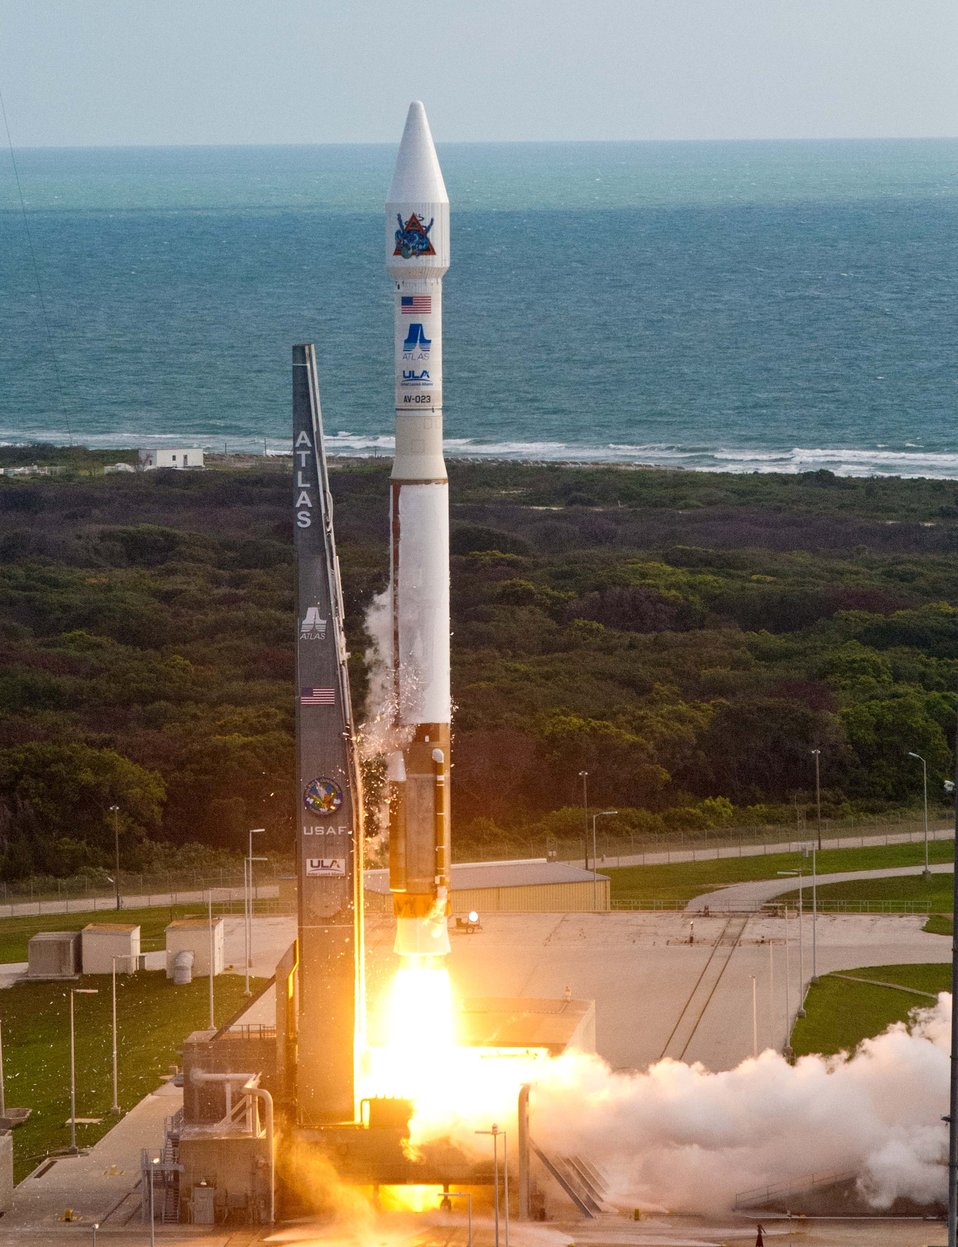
Liftoff marks the 50th Evolved Expendable Launch Vehicle mission

A United Launch Alliance Atlas V rocket carrying a payload for the National
Reconnaissance Office lifted off from Cape Canaveral Air Force Station, Fla., June 20, 2012. Designated NROL-38, the mission is in support of national defense.